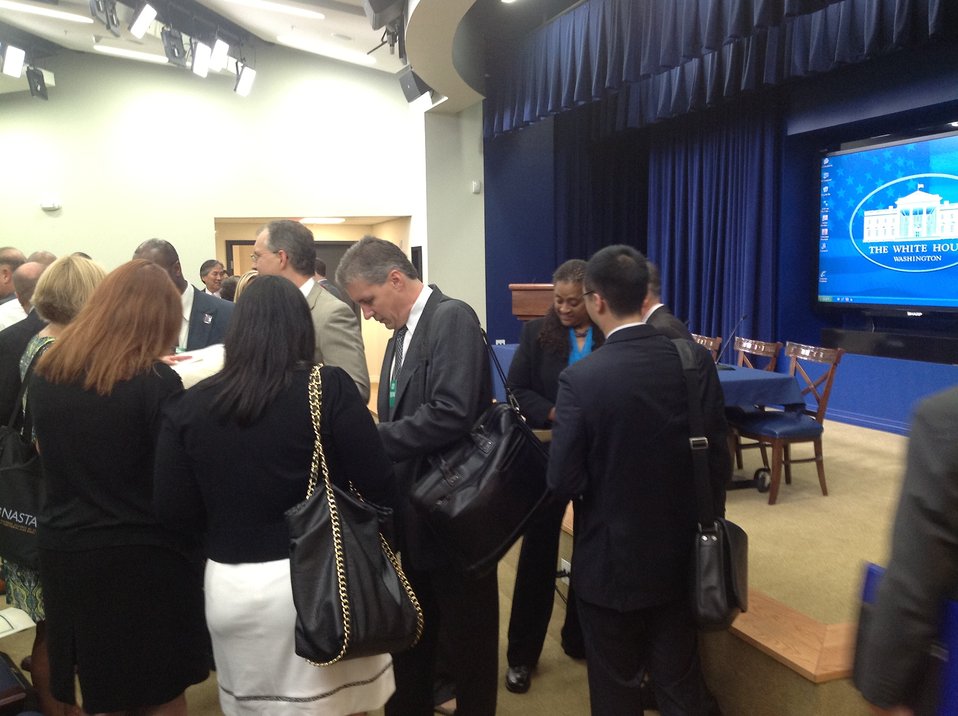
Preparing

WH 2012 World Hepatitis Day Event